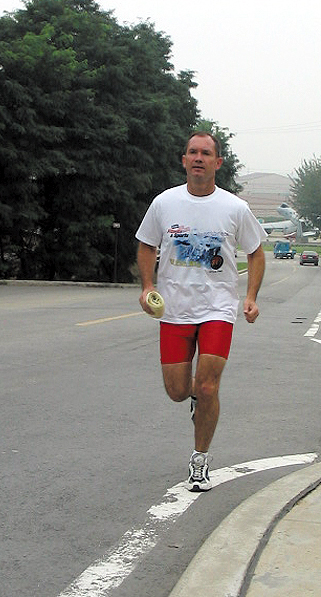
Gundrum

OSAN AIR BASE, South Korea -- Col. Jack Gundrum, 731st Air Mobility Squadron commander, runs a few miles here. The colonel lost 35 pounds through exercise and watching what he ate.